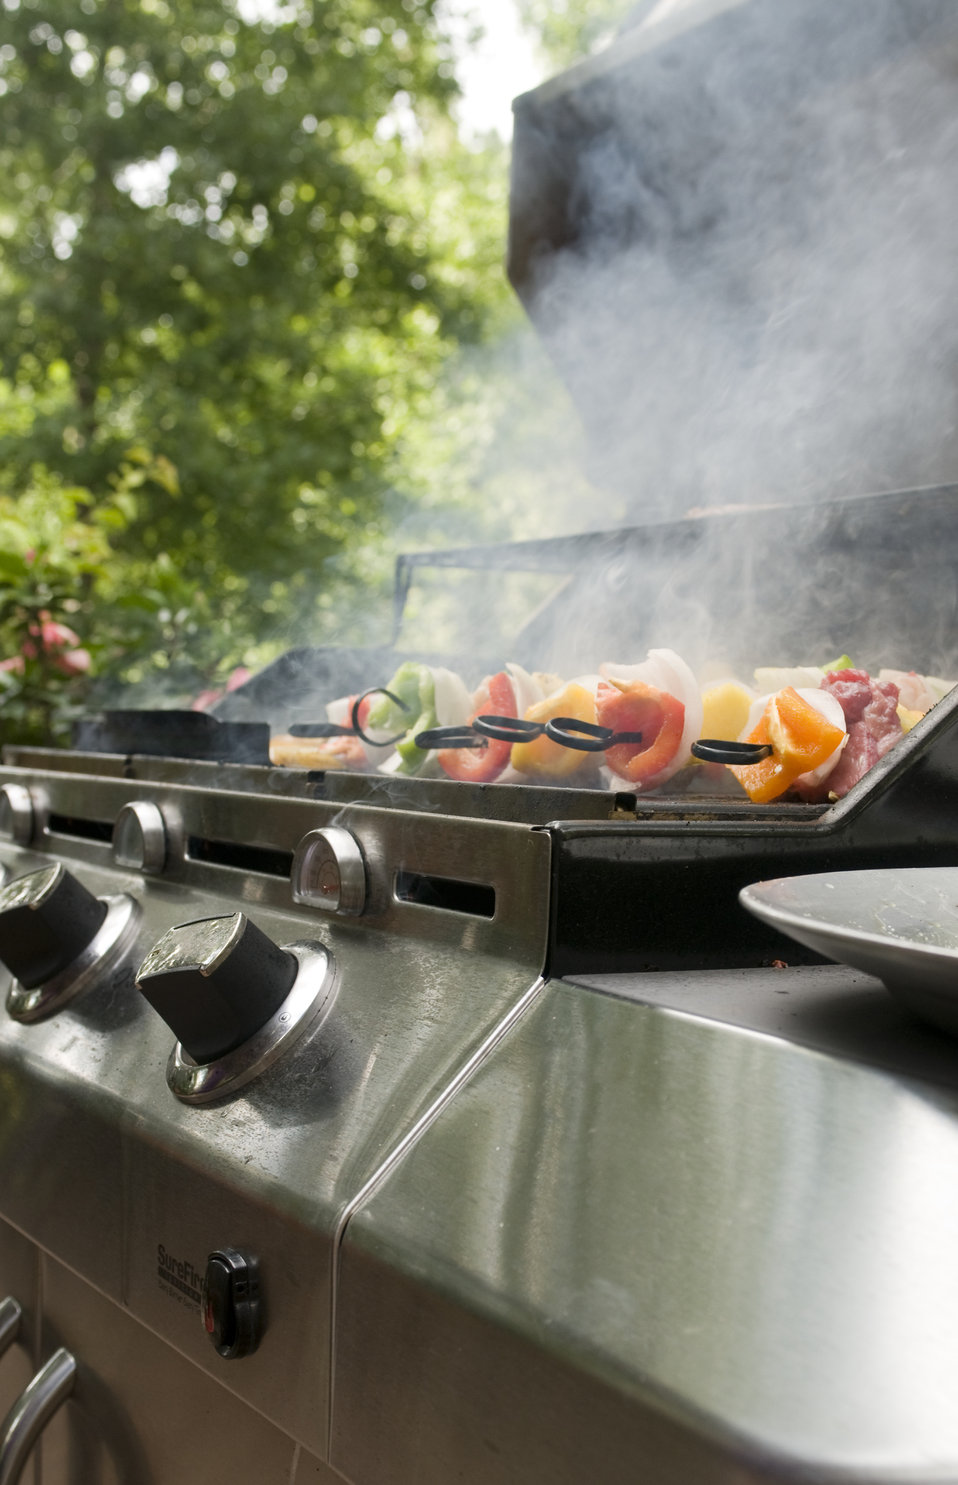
This image depicts four freshly-prepared kabobs, which had been set atop an outdoor stainless steel gas grill, and were cooking, as an enticing cloud of aromatic steam could be seen as it was released from the cooking skewers of chicken, peppers, onions, and pineapple.